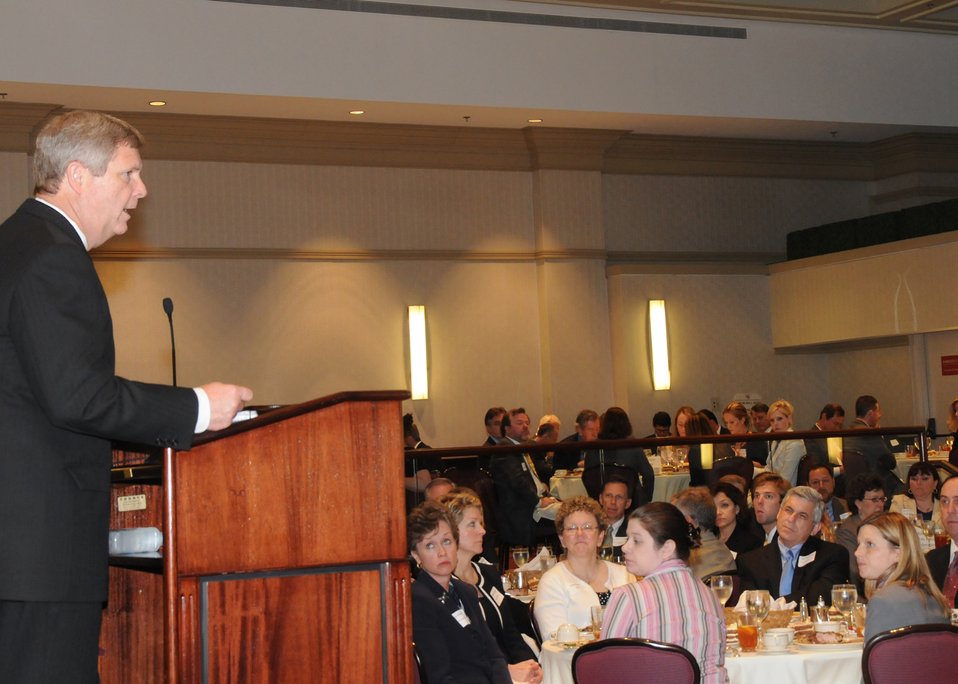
Agriculture Secretary Tom Vilsack speaks to Agribusiness leaders at the Washington Court Hotel in Washington, DC.,on Tuesday, May 25, 2010. USDA photo 10di1369-48.